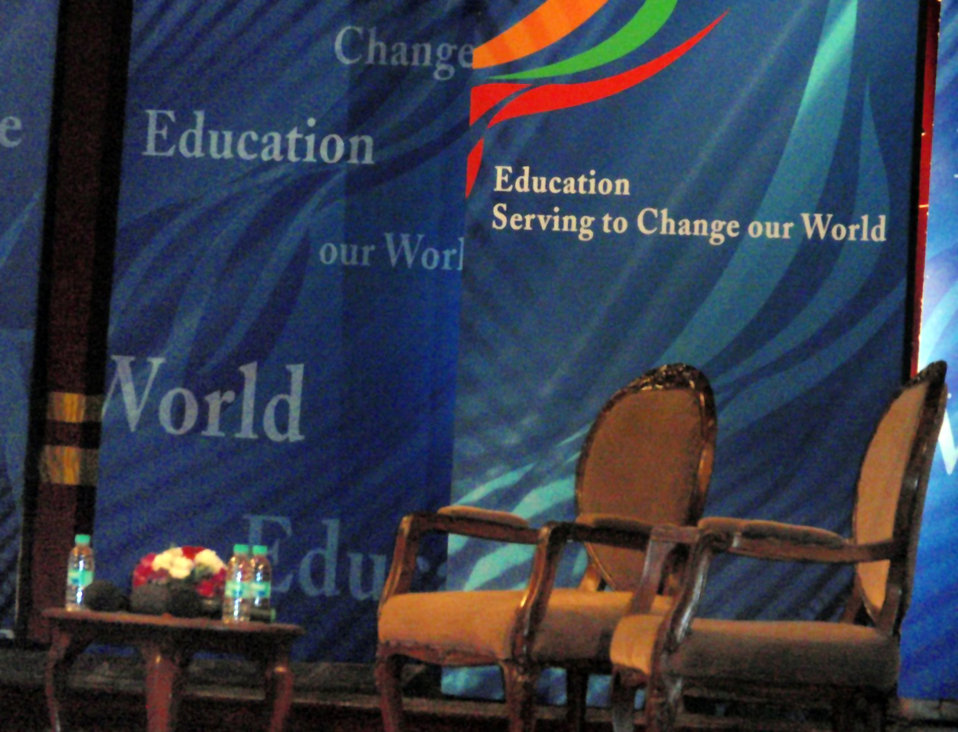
Behind the Scenes: Education and Service Town Hall Meeting

The stage is set for a town hall meeting discussing education and service with U.S. Secretary of State Hillary Rodham Clinton and Indian actor Aamir Khan at St. Xavier College in Mumbai, India July 18, 2009.